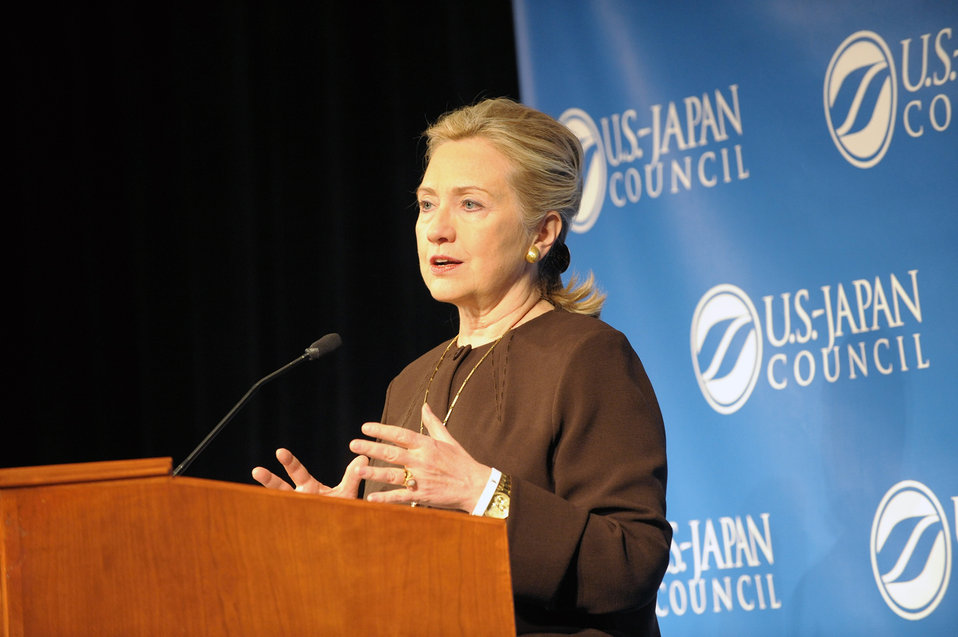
Secretary Clinton Delivers Remarks at the U.S.-Japan Council Annual Conference

U.S. Secretary of State Hillary Rodham Clinton delivers remarks at the U.S.-Japan Council Annual Conference in Washington, D.C., on October 7, 2011.